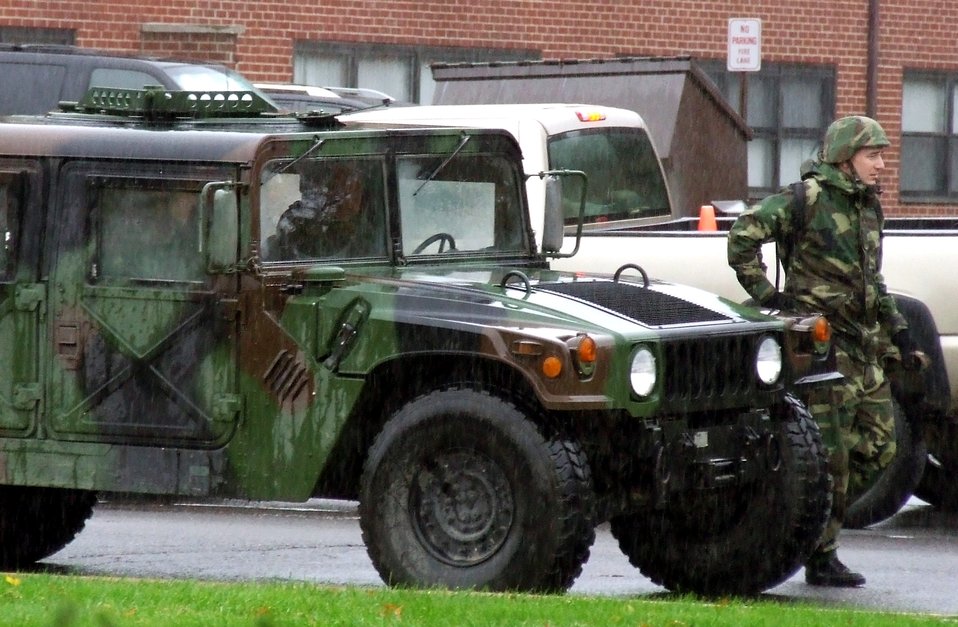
First Air National Guard contingency response group trains

Students in the Air Force Contingency Response Group Formal Training Unit Course 08-1 and the Air Force CRG FTU Advanced Course 08-1 prepare humvees for a convoy out to a range for training on night vision operations Nov. 15 at Fort Dix, N.J. The 22-day courses are taught by the Air Force Expeditionary Center's Mobility Operations School.